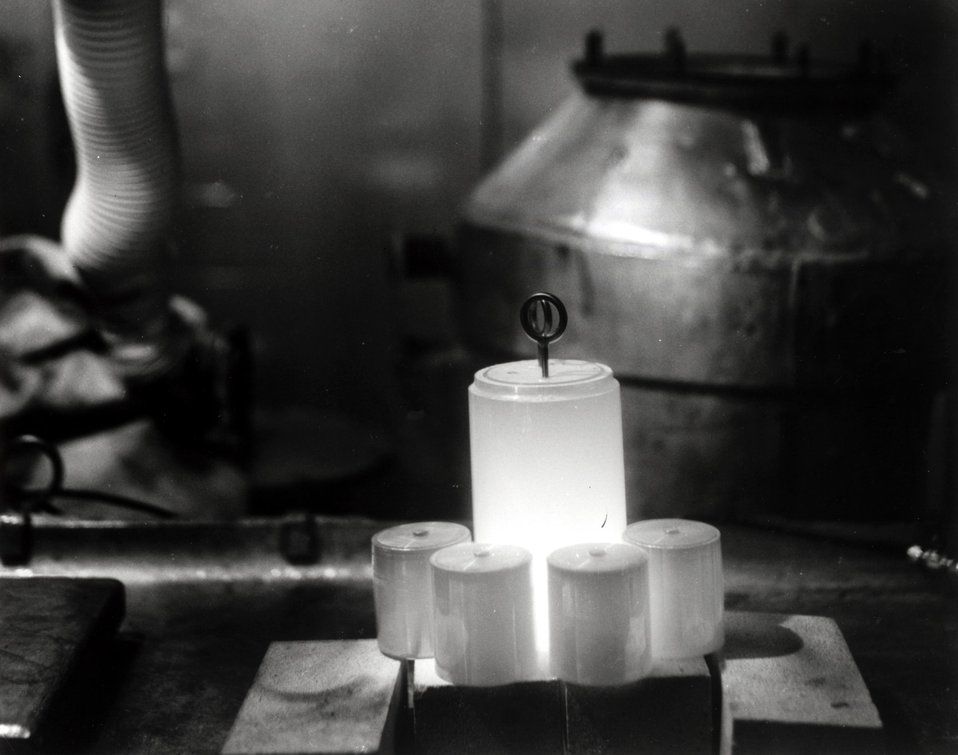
Oak Ridge, Tennessee... Stronium power sources glowing with the heat of radioactivity. These sources were fabricated for two AEC-contracted projects for the development of improved isotopic power generators.